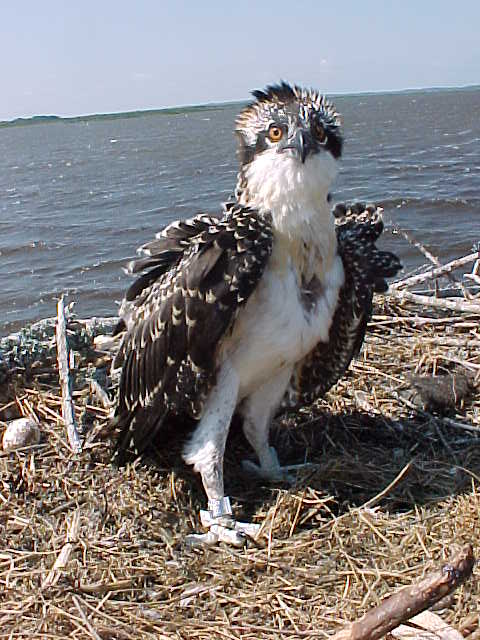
Young osprey at Back Bay National Wildlife Refuge in Virginia.